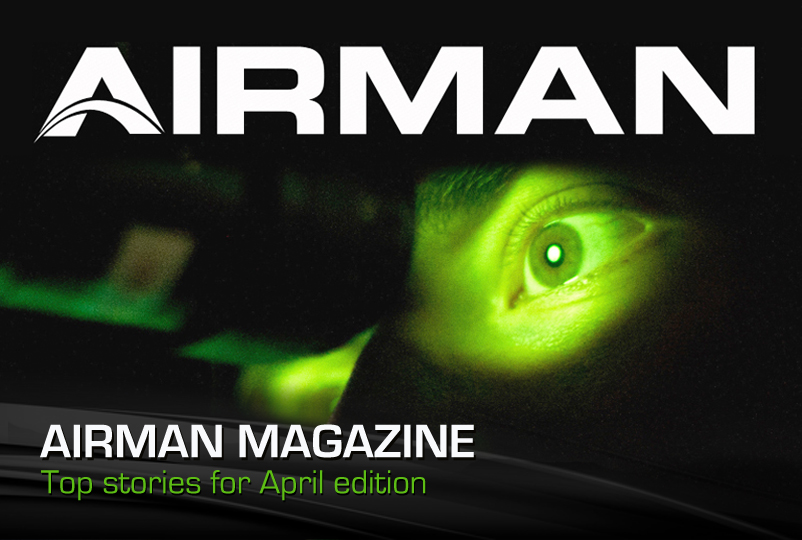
Airman Magazine